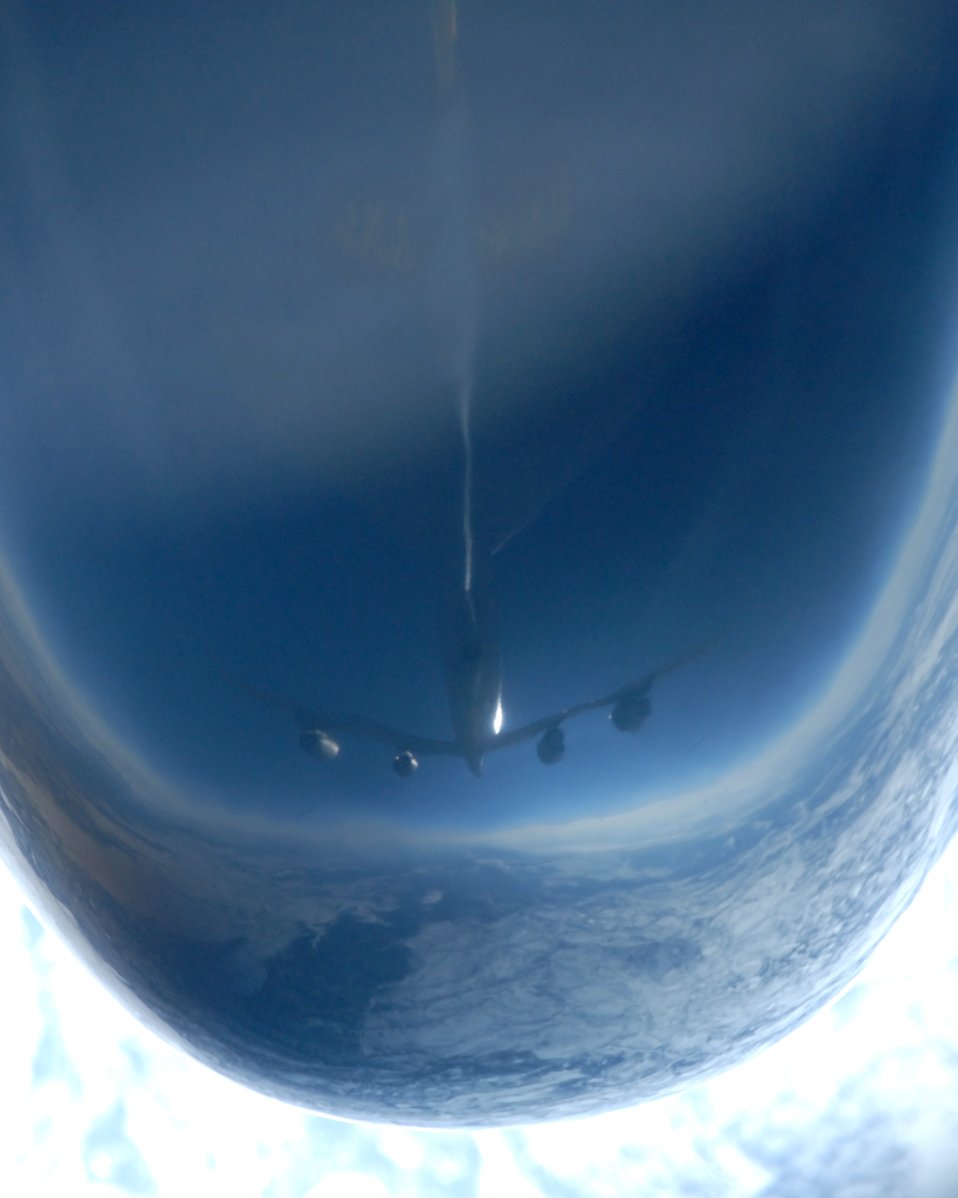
Gas at 20,000 feet

KC-135 Stratotanker is reflected in the nose of a RC-135 Cobra Ball aircraft from the 55th Reconnaissance Wing, Offutt Air Force Base, Neb., during a March 26 refueling mission over the Pacific Alaska Range Complex. The KC-135 is from the 168th Air Refueling Squadron at Eielson AFB, Alaska. The KC-135 is also capable of transporting litter and ambulatory patients using patient support pallets during aeromedical evacuations.